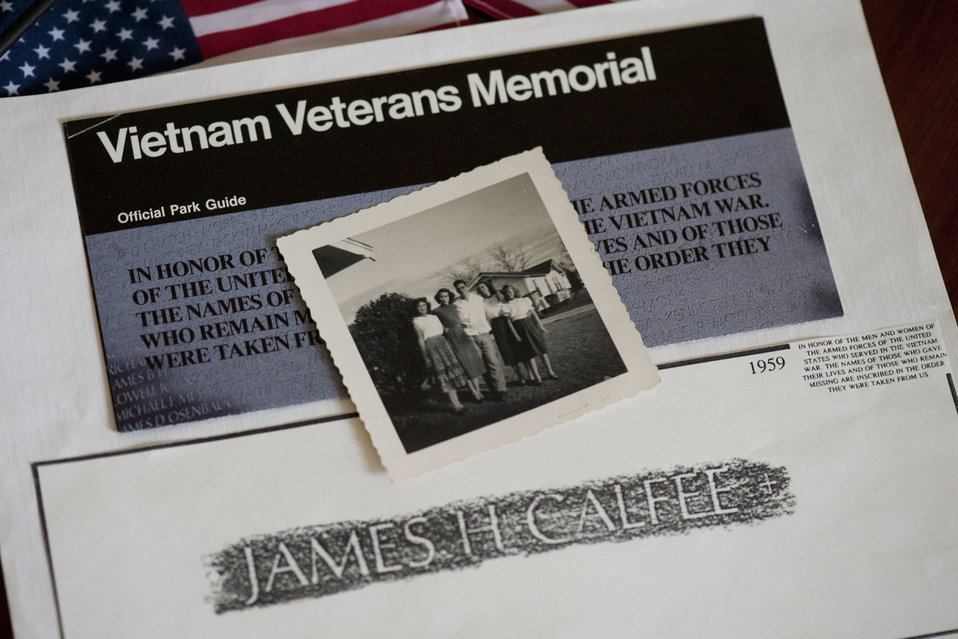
Silver Star hero

A photo of the late Master Sgt. James Calfee with his sisters sits on a Vietnam Veterans Memorial guide in Houston, Texas, Aug. 22, 2012.